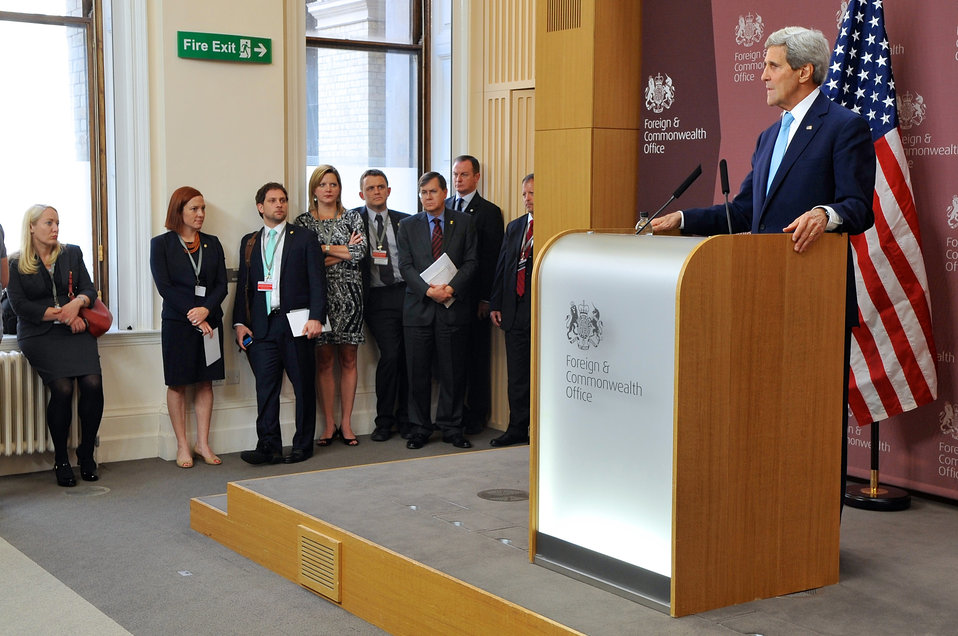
Secretary Kerry Holds News Conference in London

As staff members look on, U.S. Secretary of State John Kerry holds a news conference after a series of ministerial meetings focused on Syria, Ukraine, and Libya in London on May 15, 2014.